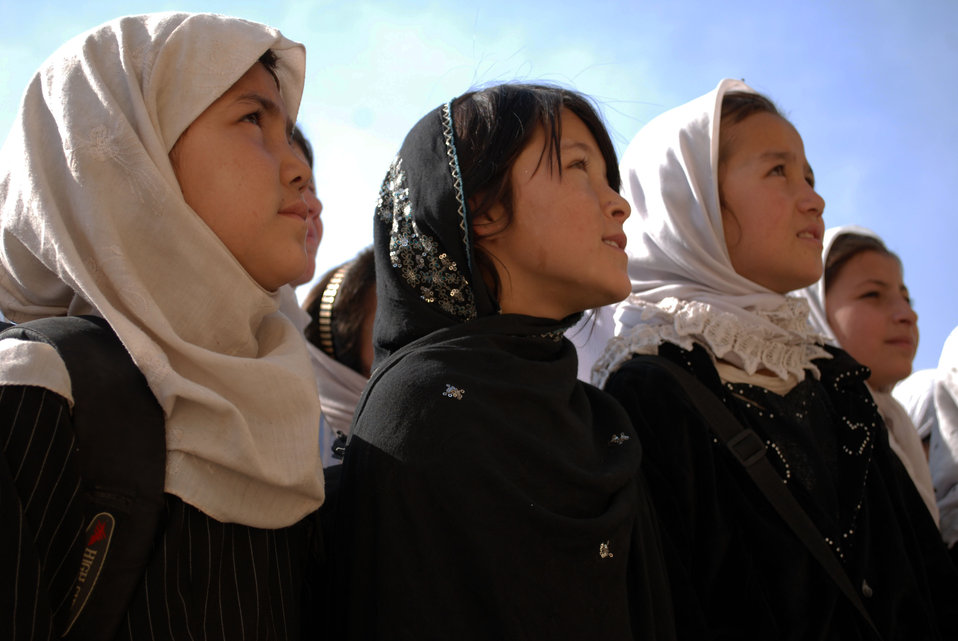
'On the Road' in Balkh Province